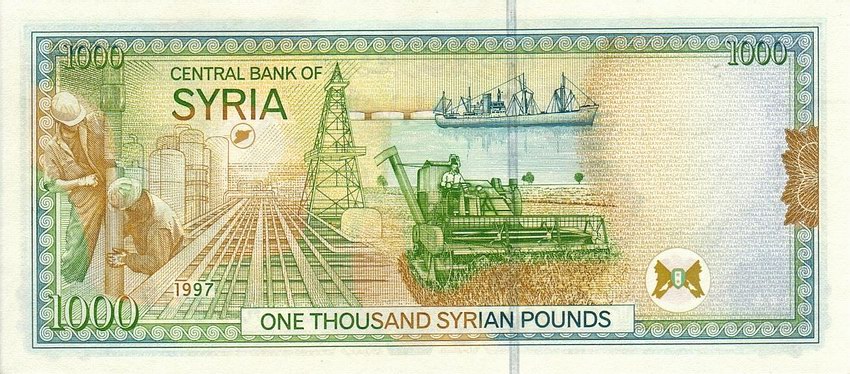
1000 SYP, reverse